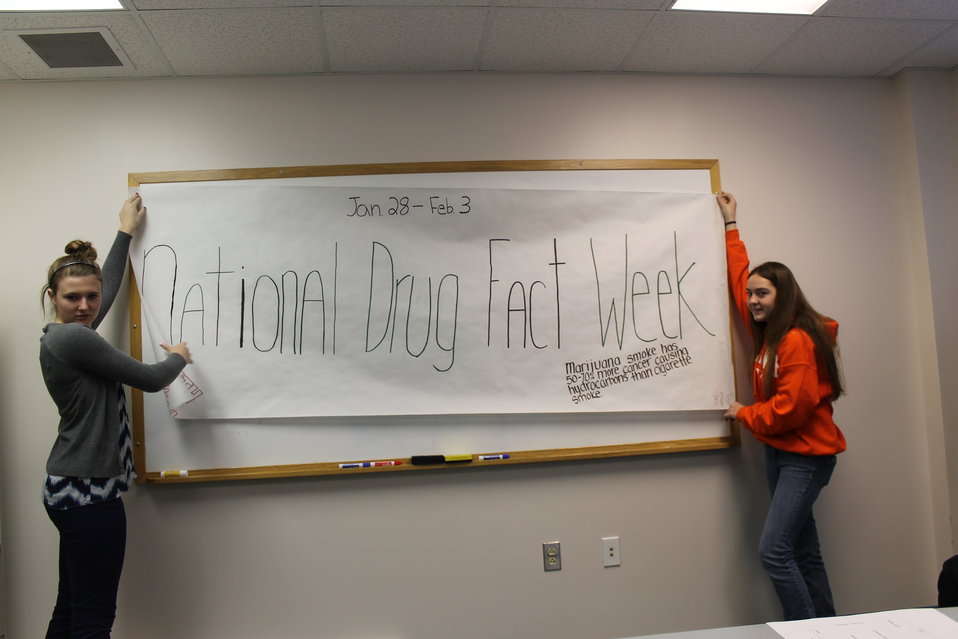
Hanover Horton, NDFW 2013

Jackson, Mich. Jackson County Substance Abuse Prevention Coalition host NDFW 2013 Events.